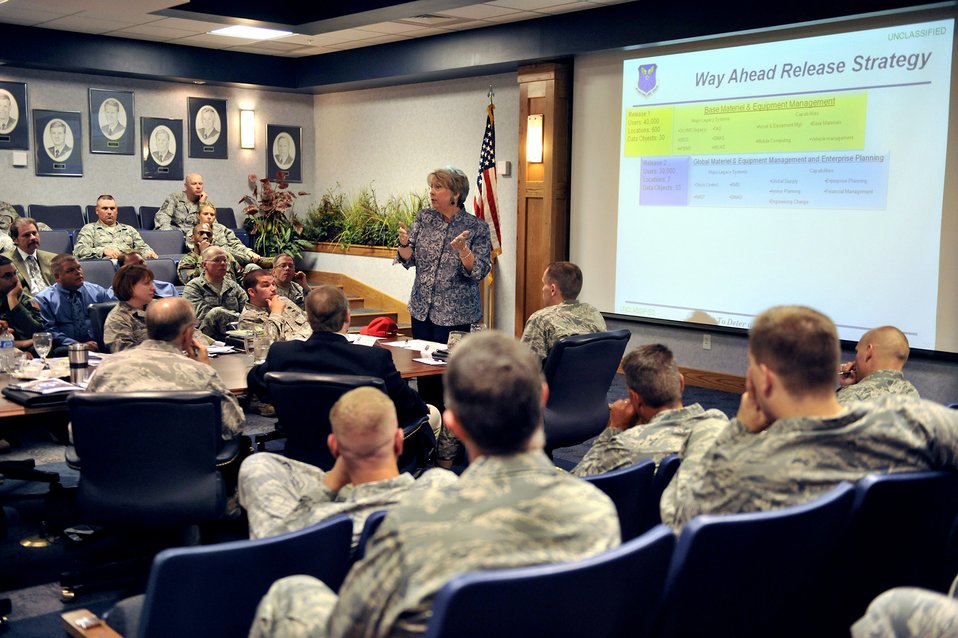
Expeditionary Combat Support System

Ann Mitchell briefs leaders at Malmstrom Air Force Base, Mont., on the logistics conversion to the Expeditionary Combat Support System July 22, 2010, during a site visit. Ms. Mitchell is the Air Force Global Strike Command director of installations, logistics and mission support.